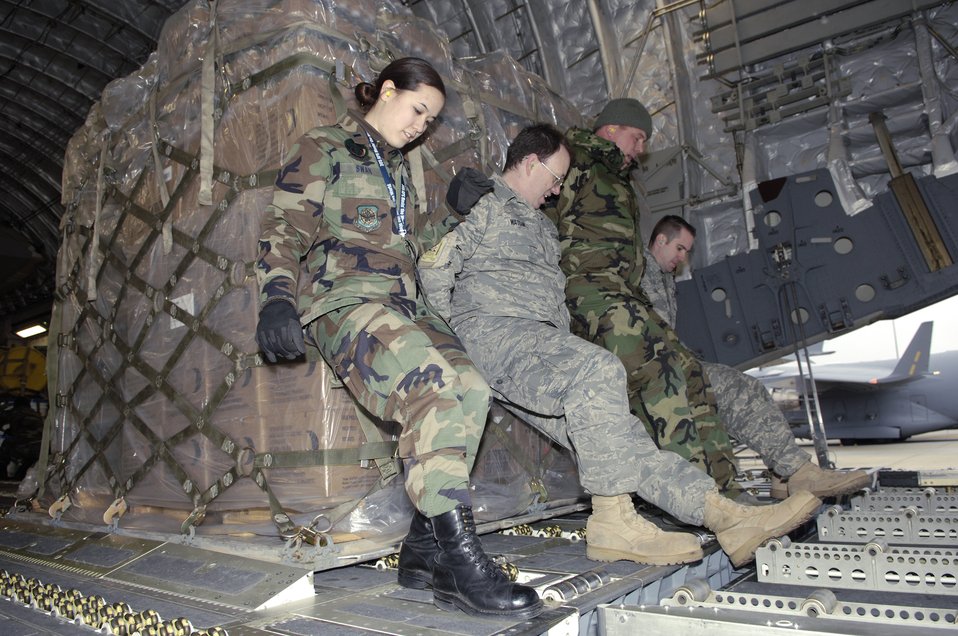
McGuire Airmen support downed satellite cleanup

Members of the 305th Aerial Port Squadron move pallets of equipment and supplies for Joint Task Force Operation Burnt Frost onto a C-17 Globemaster III Feb. 20 at McGuire Air Force Base, N.J. The JTF was the recovery part of Operation Burnt Frost which covers the shoot down of the errant satellite loaded with hydrazine. The supplies were for 15 federal agencies tasked to handle the environmental effects of the satellite's reentry into the atmosphere.